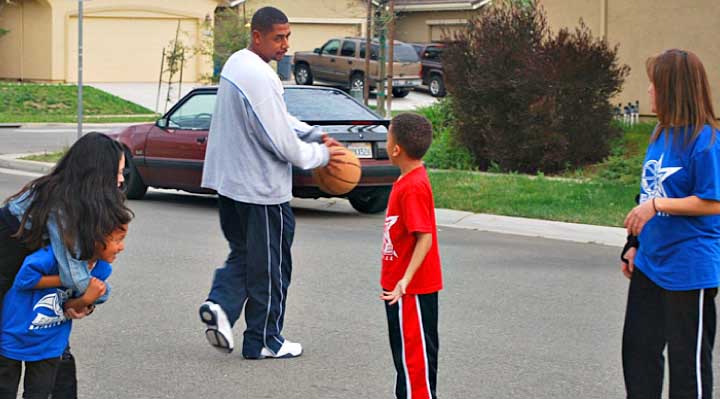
FitFamily

The Harrison family plays a game of basketball in front of their residence on Beale Air Force Base, Calif. Williiam and Janice Harrison, along with their children, were selected as the Air Force FitFamily for the month of March.